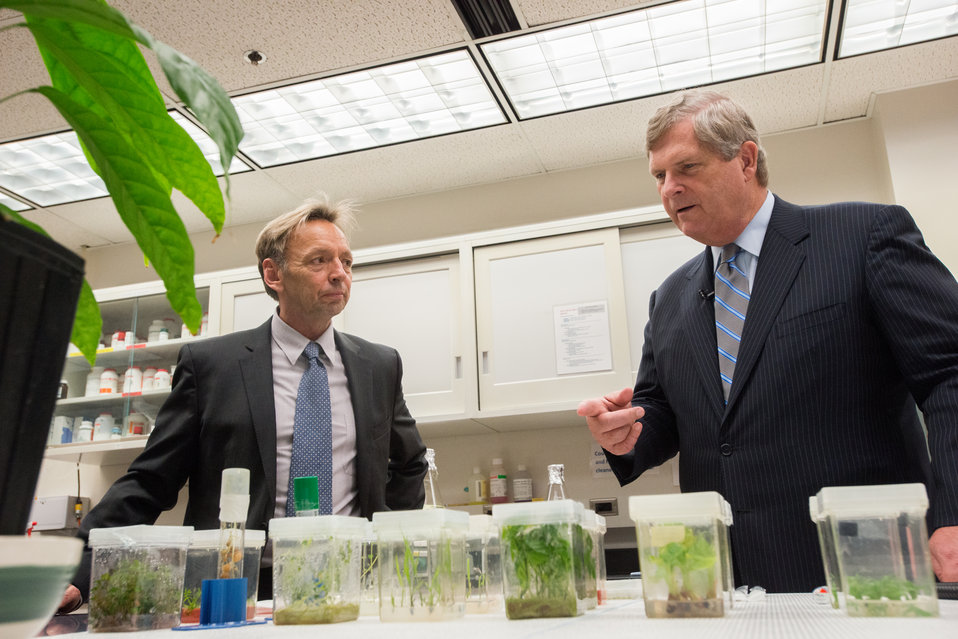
U.S. Department of Agriculture (USDA) Agriculture Research Service (ARS) Geneticist Research Leader Dr. David Dierig listens to Agriculture Secretary Tom Vilsack's questions about the plant tissue studies being done at the USDA’s ARS National Center for Genetic Resources Preservation (NCGRP) in Ft. Collins, CO on Wednesday, Nov. 6, 2013. NCGRP is the largest agricultural gene bank facility in the U.S. The NCGRP staff conducts groundbreaking research to develop more efficient and effective means for preserving plant and animal germplasm, and for better understanding the genetic structure of these invaluable materials. The research findings, preservation techniques, and specialized technology developed by the NCGRP have been adopted by gene banks around the world: many international scientists travel to the NCGRP for research and training.